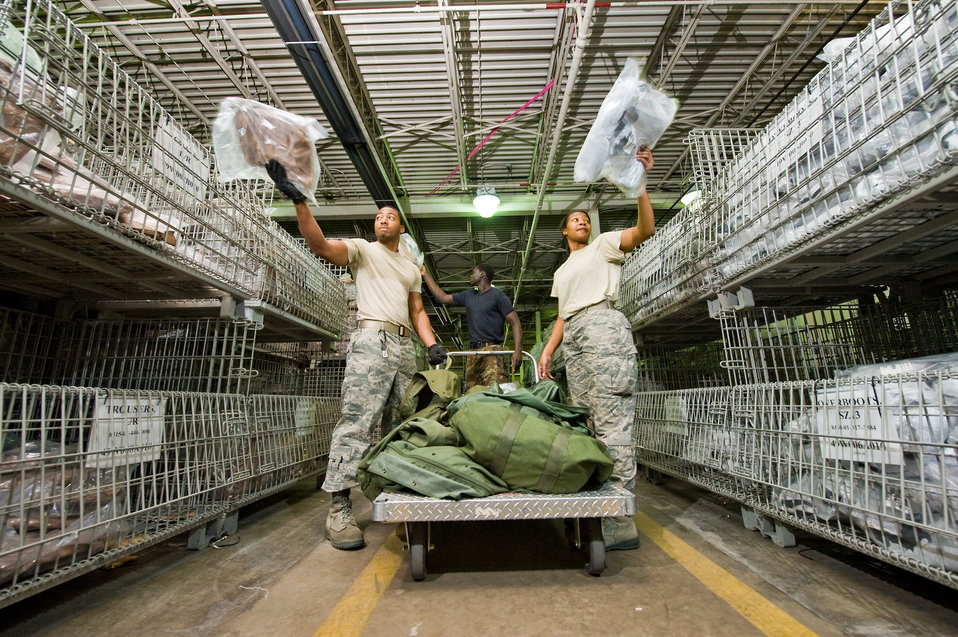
Airman 1st Class Alexander White (left), Senior Airman Deng Deng, Airman 1st Class Caroline Robinson (right) break down real-world chemical warfare protective equipment bags, after a recent pre-operational readiness inspection. They are material management specialists, with the individual protective equipment section of the 319th Logistics Readiness Squadron at Grand Forks Air Force Base, ND on Sept 3, 2009.